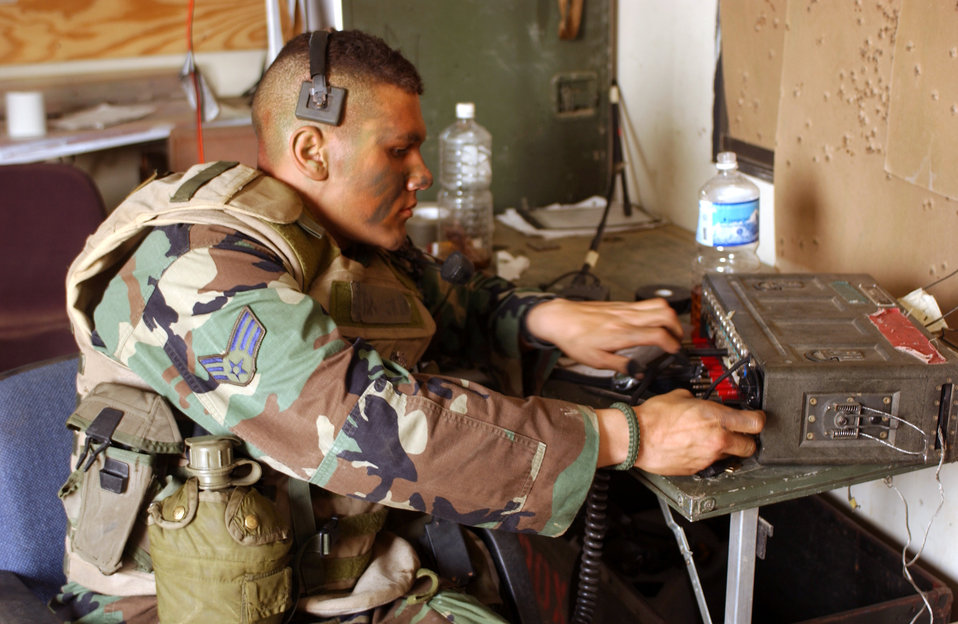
Commando Warrior prepares Airmen for war on terrorism

Senior Airman Arend Clifford relays information to security forces during a Commando Warrior class exercise at Osan Air Base, Korea. Commando Warrior trains Airmen throughout the Pacific Air Forces area for deployments supporting the war on terrorism. Airman Clifford is assigned to Kunsan AB, South Korea.